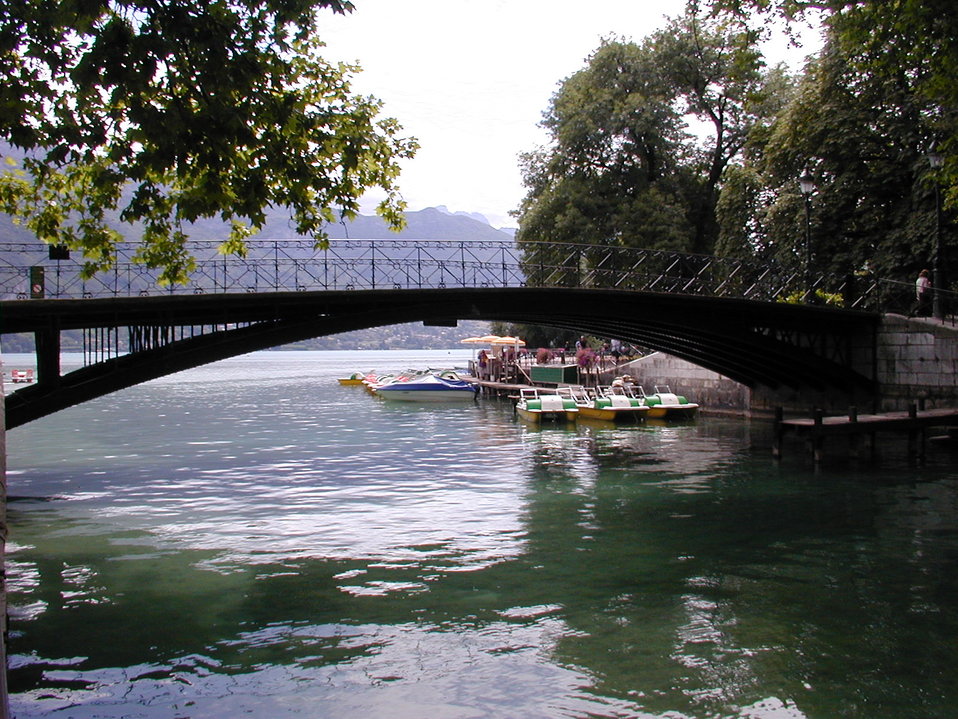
0306 Annecy - Pont des Amours